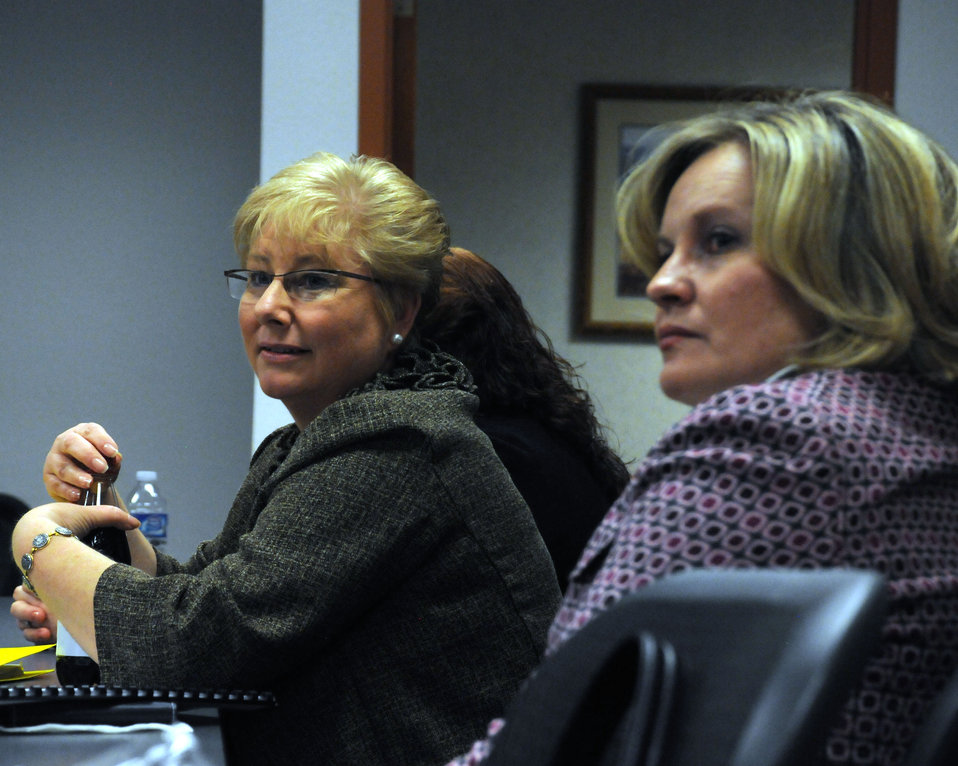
Chief Roy visits F.E. Warren Air Force Base

Paula Roy (left), wife of Chief Master Sergeant of the Air Force James Roy, and Julie Tims, wife of Col. Gregory Tims, the 90th Missile Wing commander, listen to a briefing March 3, 2011, at the Airmen and Family Readiness Center at F. E. Warren Air Force Base, Wyo.